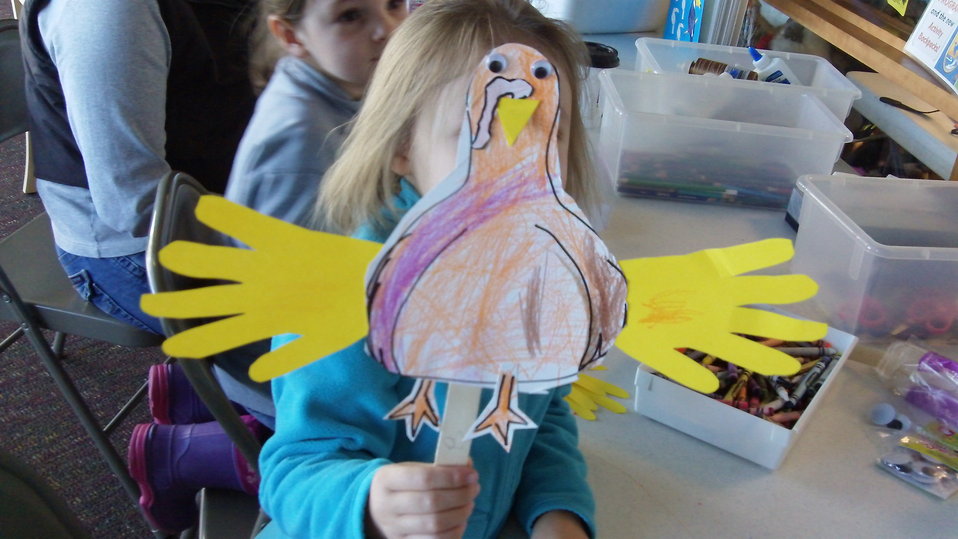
Handmade Turkey Puppet

Crafts of all kinds were enjoyed by the kids, including coloring, journal making and the construction of handmade Turkey puppets! November 2010.

Photo (and puppet design): Jason St. Sauver / USFWS